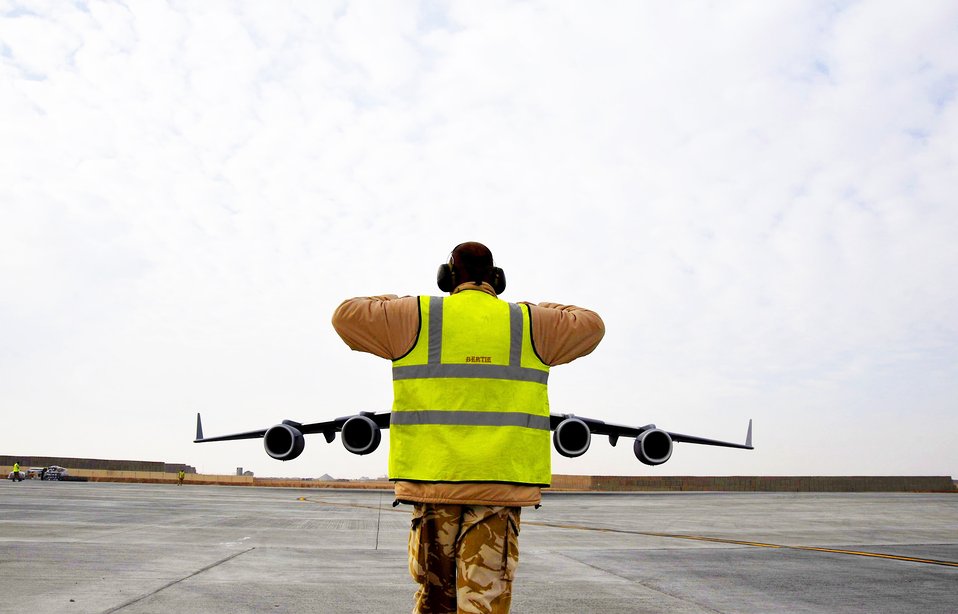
Stop now, mate!

A British air force member guides a U.S Air Force C-17 Globemaster III into a parking spot Dec. 11, 2009, at Camp Bastion, Afghanistan. The C-17 is delivering equipment to provide safety and security during convoy operations.